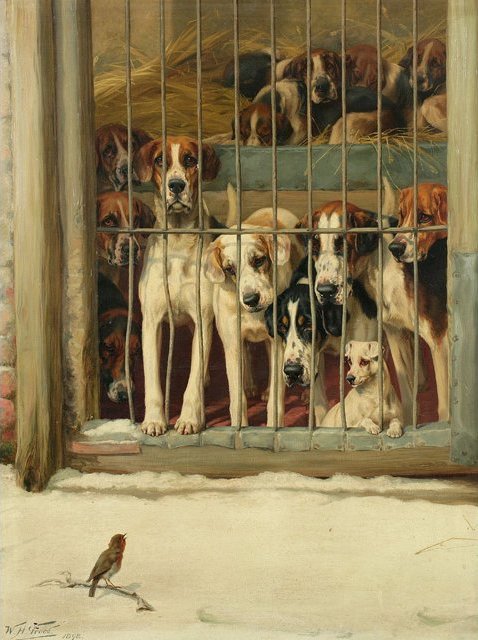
'Hounds in a Kennel' by William Trood